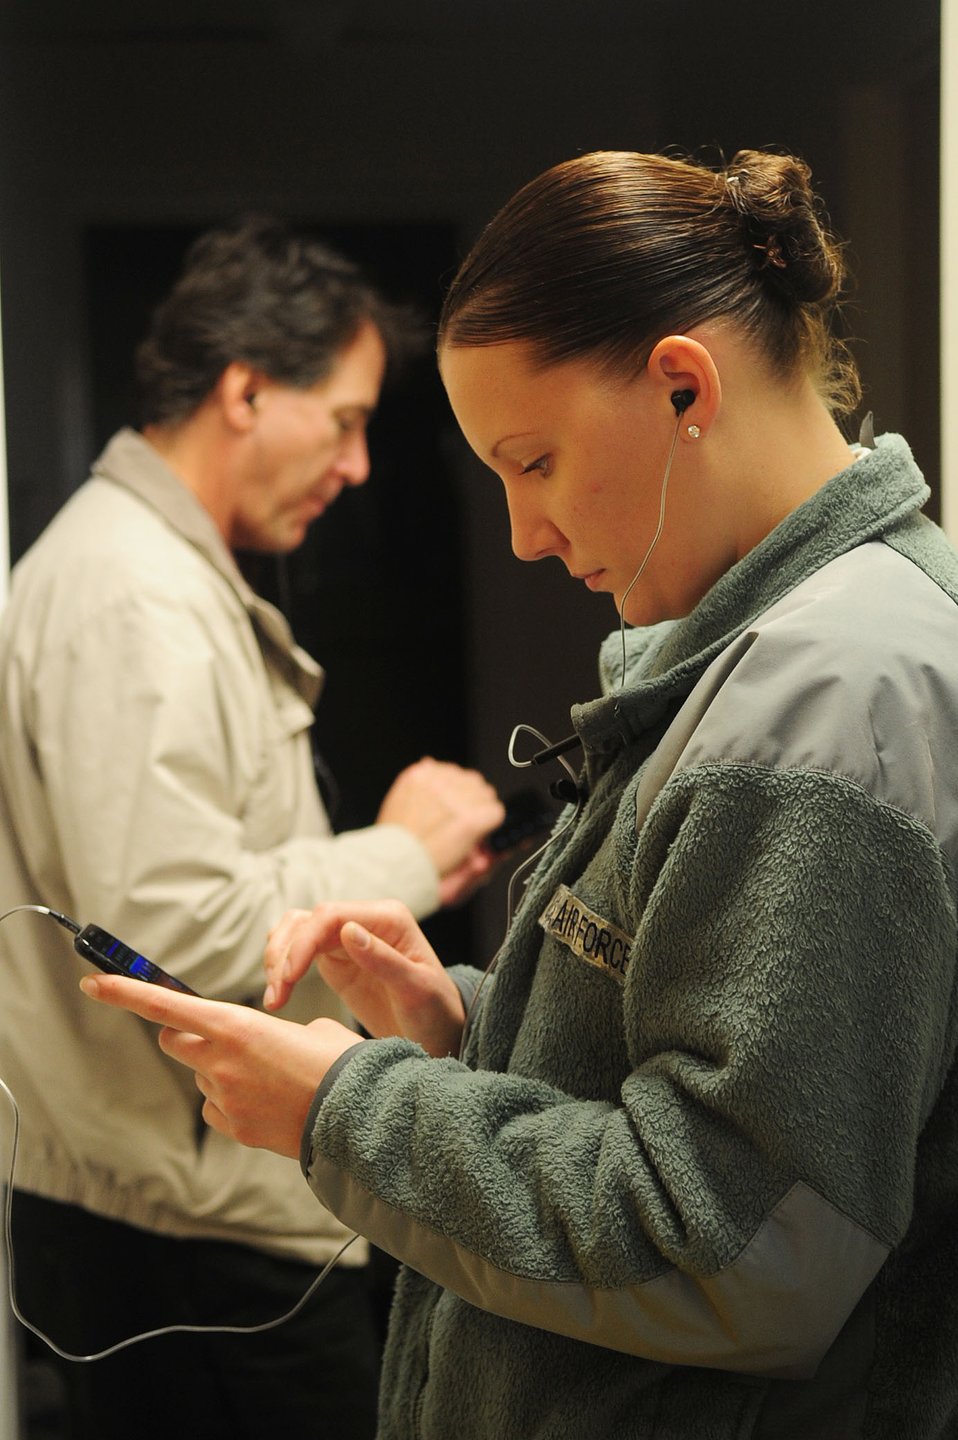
Air Force tests next-gen networks, devices

Ken Hughes, (left) an Air Force Integrations Center systems engineer, and Staff Sgt. Sarah Kearney, a 633rd Security Forces Squadron patrolman, send and receive messages during a Joint Expeditionary Force exercise at Joint Base Langley-Eustis, Va., Jan. 25, 2012. Participants traveled in groups to various locations to test and collect data on cellular networks and their capabilities.